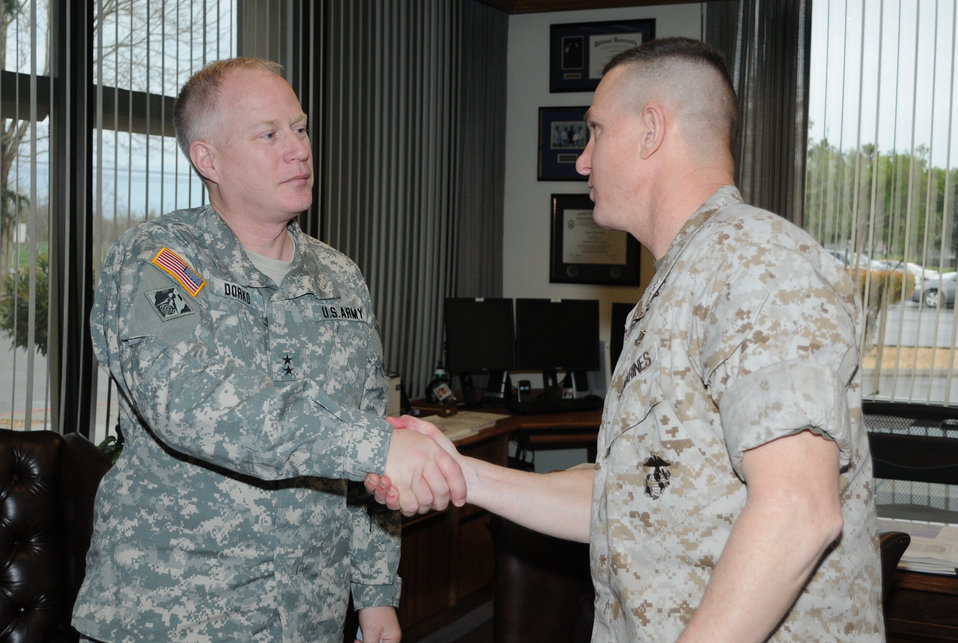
Maj. Gen. Jeffrey J. Dorko, the Deputy Commanding General for Military and International Operations for the U.S. Army Corps of Engineers, greets Marine Col. Adrian W. Burke, commander of the Defense Logistics Agency Distribution San Joaquin, during a recent trip to Tracy Army Depot March 23.